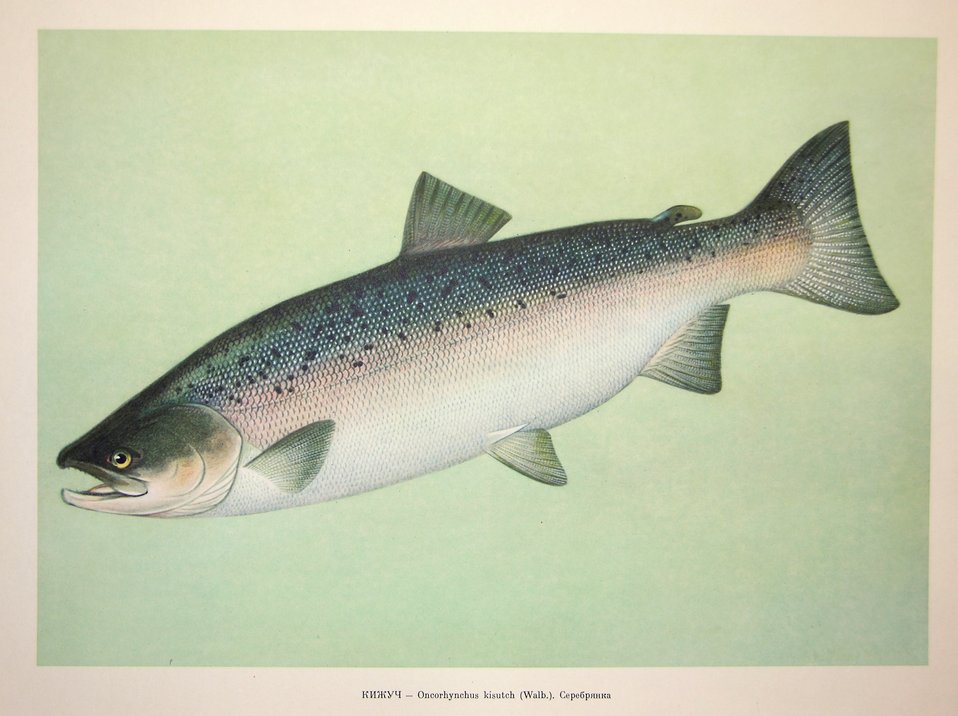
Plate 44. Oncorhynchus kisutch (Walb.). Family Salmonidae. In: Fishery Resources of the USSR, N.N.Kondakov, Artist Editor. 1957. NOAA Central Library Call Number: SH91.R9 1957.